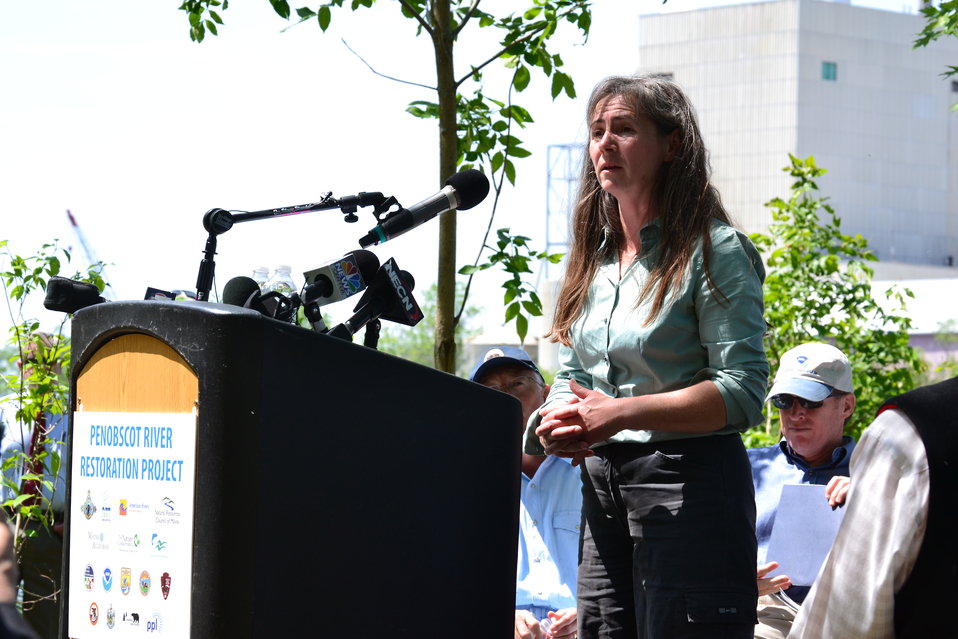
Laura Rose-Day, Executive Director, Penobscot River Restoration Trust